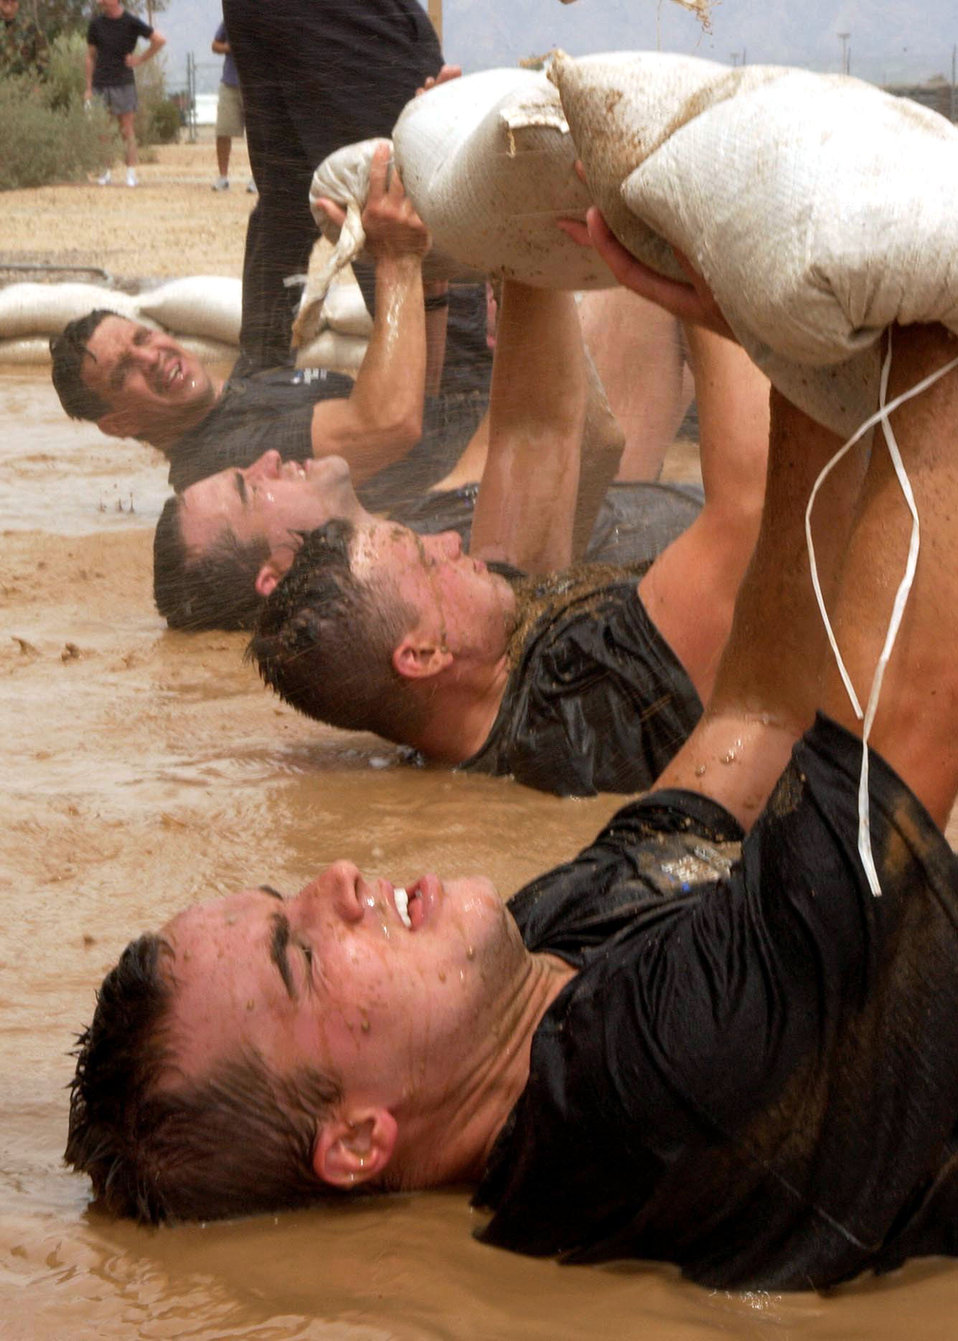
PJ selection process

Alan Brumfield holds a sand bag over his chest while lying in a mud pit along with other military and civilian applicants during the 306th Rescue Squadron pararescue screening at Davis-Monthan Air Force Base, Ariz., on Friday, April 21, 2006. Applicants must pass a timed 3-mile run, 1,500-meter swim, calisthenics and other tasks before proceeding to the 10-week indoctrination course at Lackland AFB, Texas.